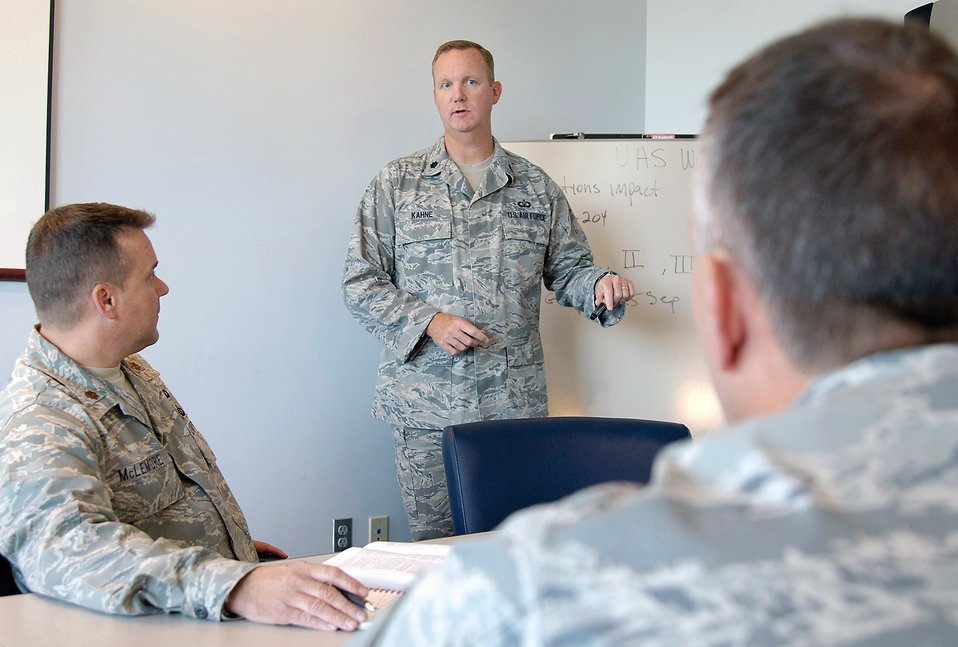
Air Force Flight Standards Agency

Lt. Col. Richard Kahne leads a meeting of the Unmanned Aircraft Systems Working Group Aug. 31, 2009, at the Air Force Flight Standards Agency in Oklahoma City as they discuss issues integrating unmanned aircraft into the national airspace.